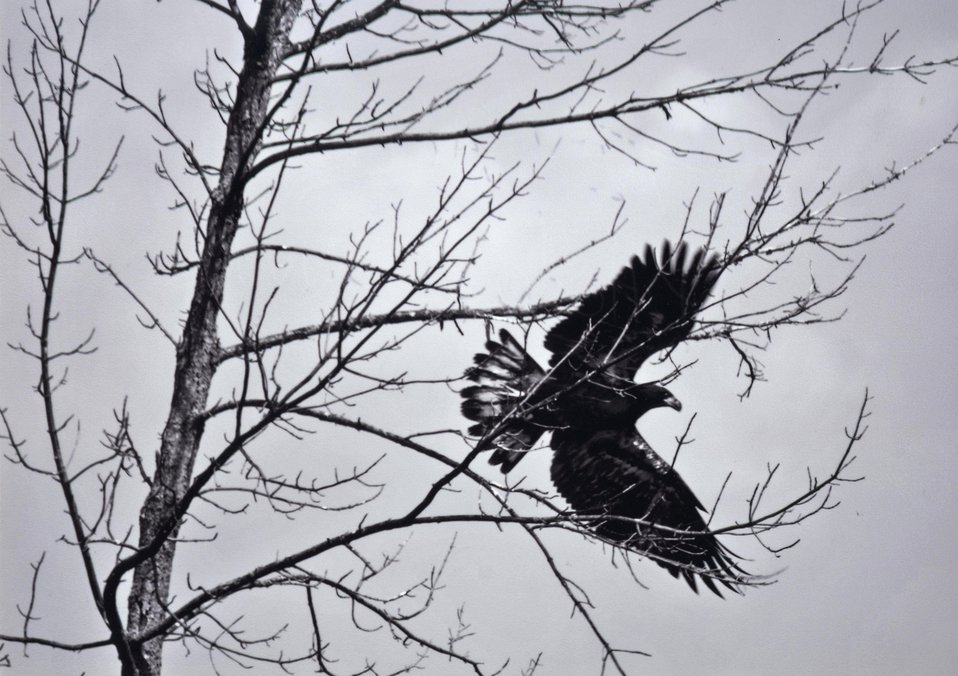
Living Free

Photo by Tex Allen/USFWS.

Shiawassee National Wildlife Refuge 2013 Photo Contest